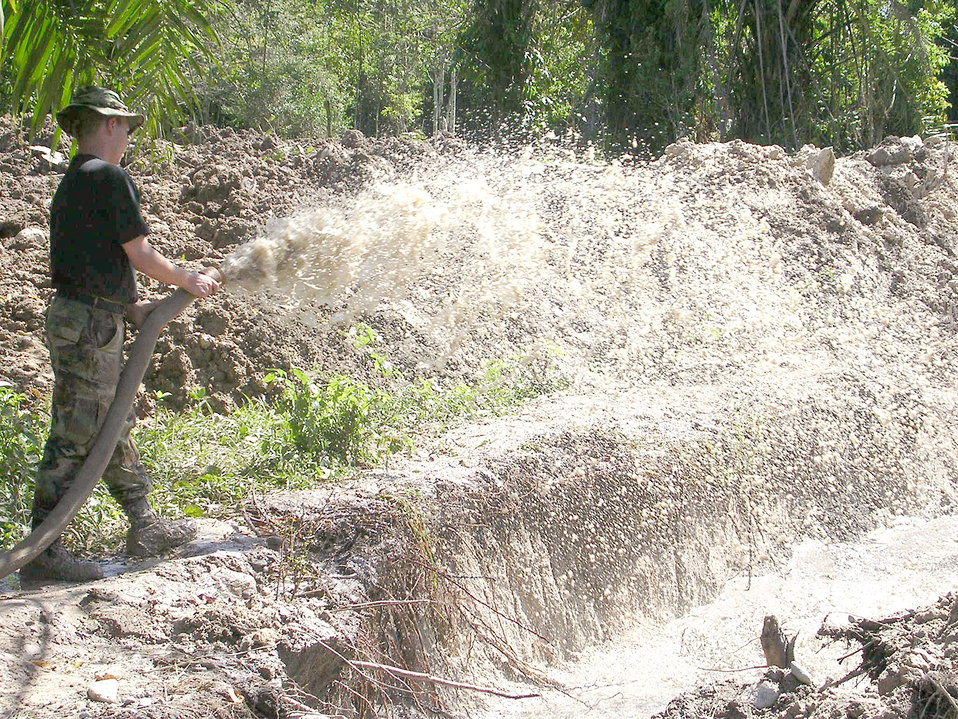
Alaskan team build school in Honduras

Senior Airman Julian Sisneros aims a hose used to remove more than 500,000 gallons of water from the 354th Civil Engineer Squadron's job site. Airman Sisneros is among 17 Airmen deployed from the 354th Civil Engineer Squadron at Eielson Air Force Base, Alaska, in support of New Horizons 2006-Honduras. The 354th is building a three-classroom school in the small village of El Cacao.